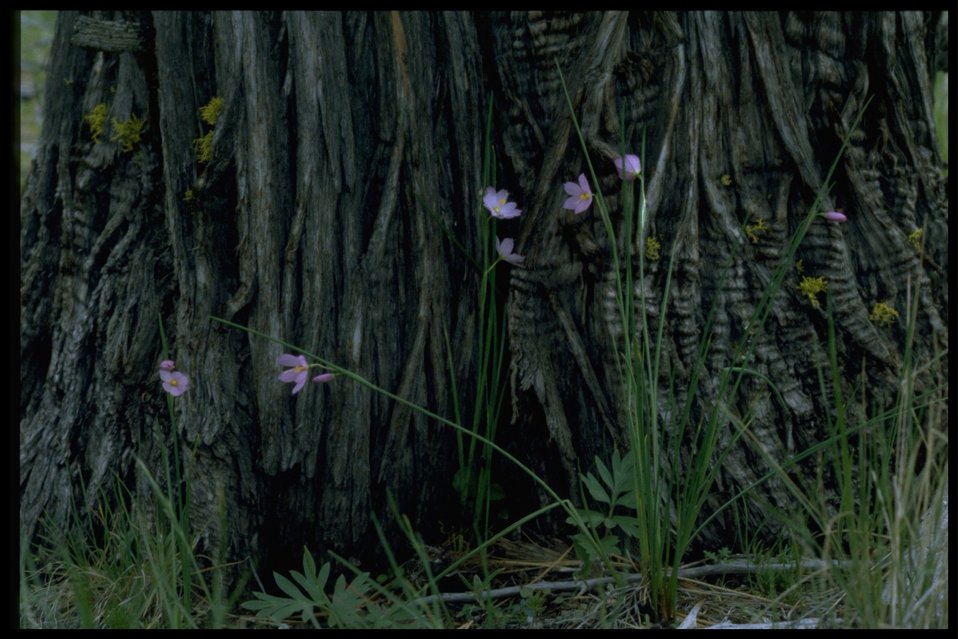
Farshot of inflated grasswidow (Olsynium douglasii var. inflatum).